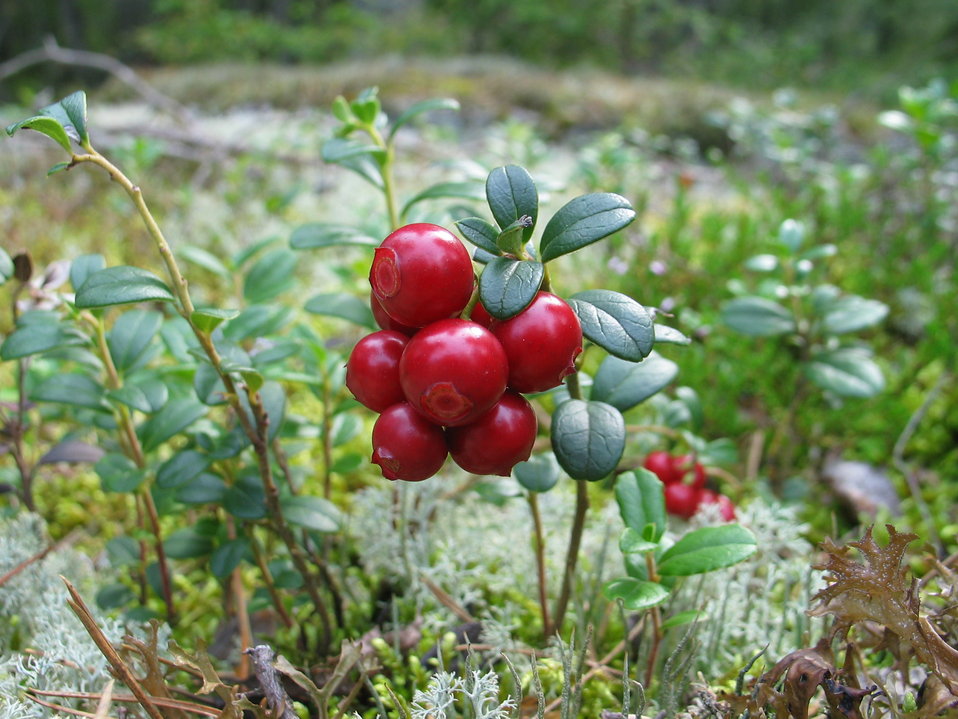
Vaccinium vitis-idaea, photo taken in Sweden.